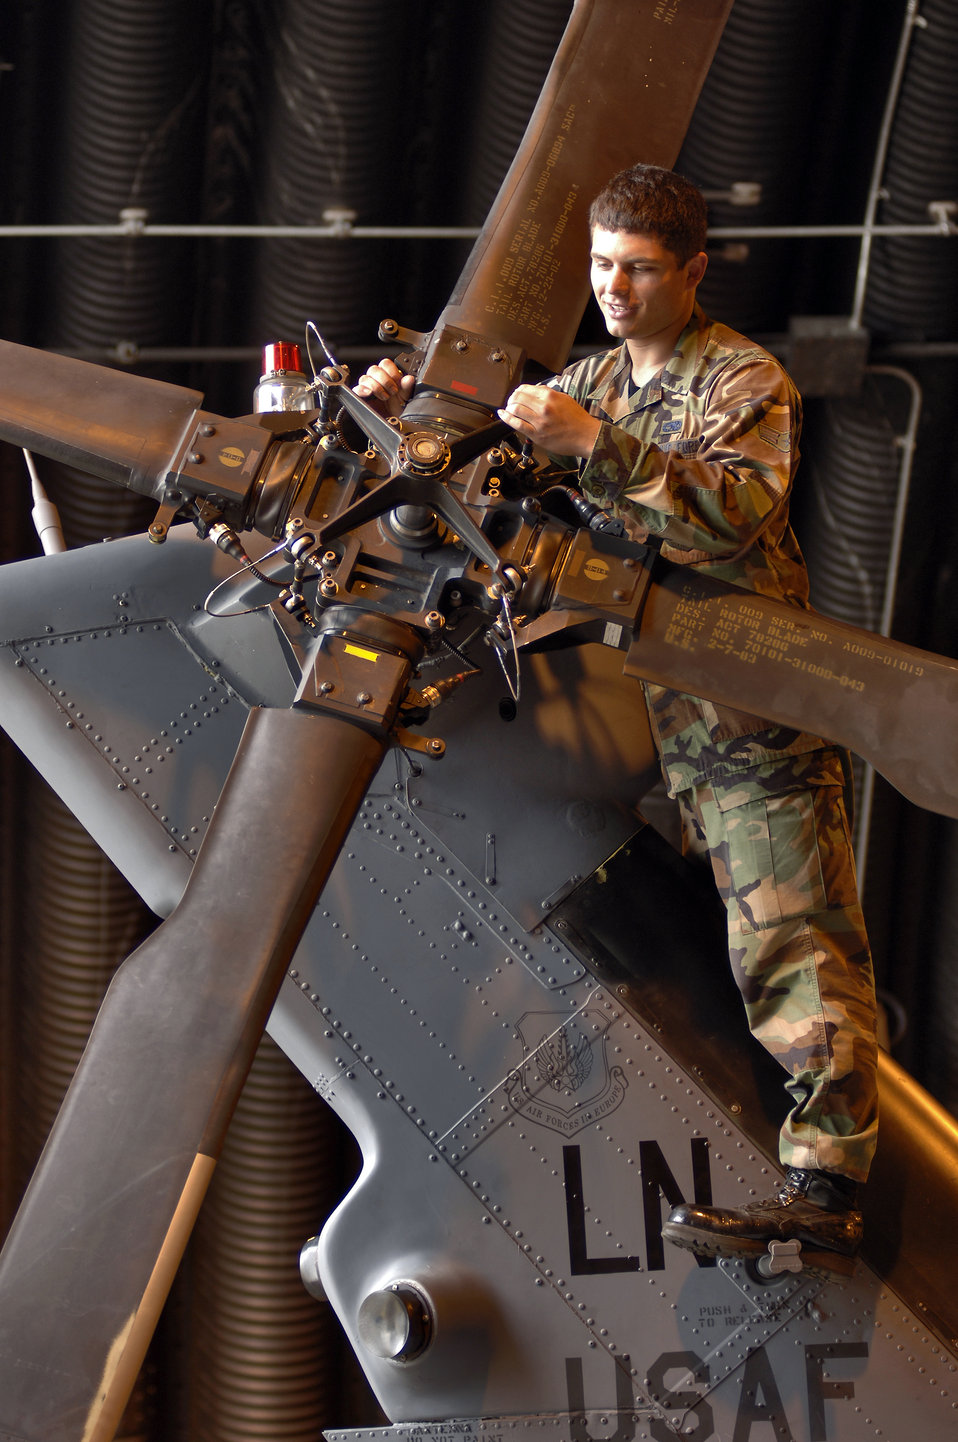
Rescue unit faces moving challenges

Airman 1st Class Antonio Yabarra inspects the tail rotor of an HH-60G Pave Hawk helicopter at Royal Air Force Lakenheath, England, on Aug. 2. The Airman is a crew chief with the 56th Aircraft Maintenance Unit. The unit supports the 56th Rescue Squadron, which moved to this fighter base from Keflavik Air Base, Iceland, in May.